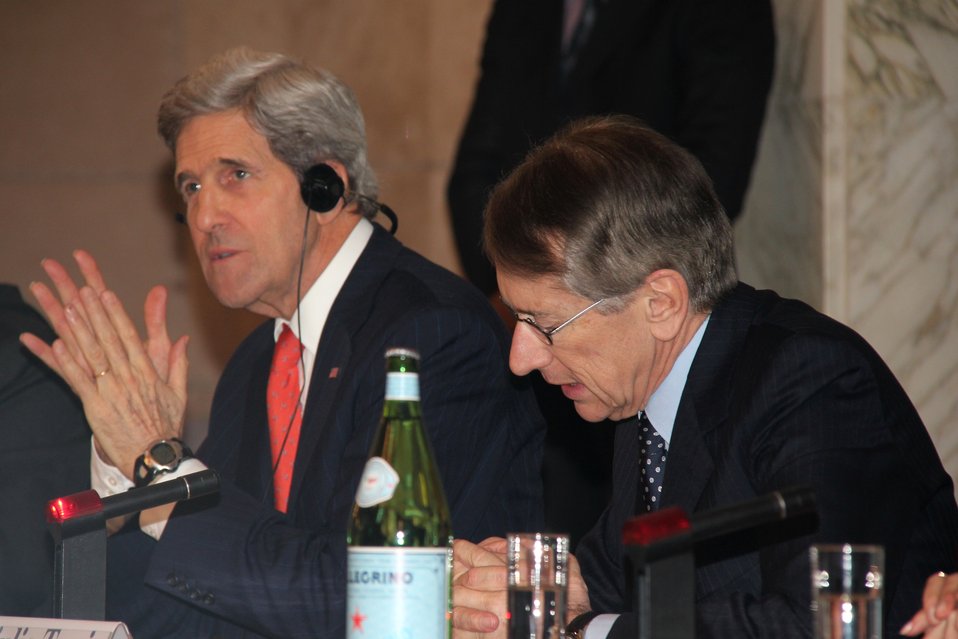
Secretary Kerry and Italian Foreign Minister Terzi Participate in a Cultural Event

U.S. Secretary of State John Kerry and Italian Foreign Minister Giulio Terzi participate in an event for the 2013 Year of the Italian in the United States in Rome, Italy, on February 28, 2013.